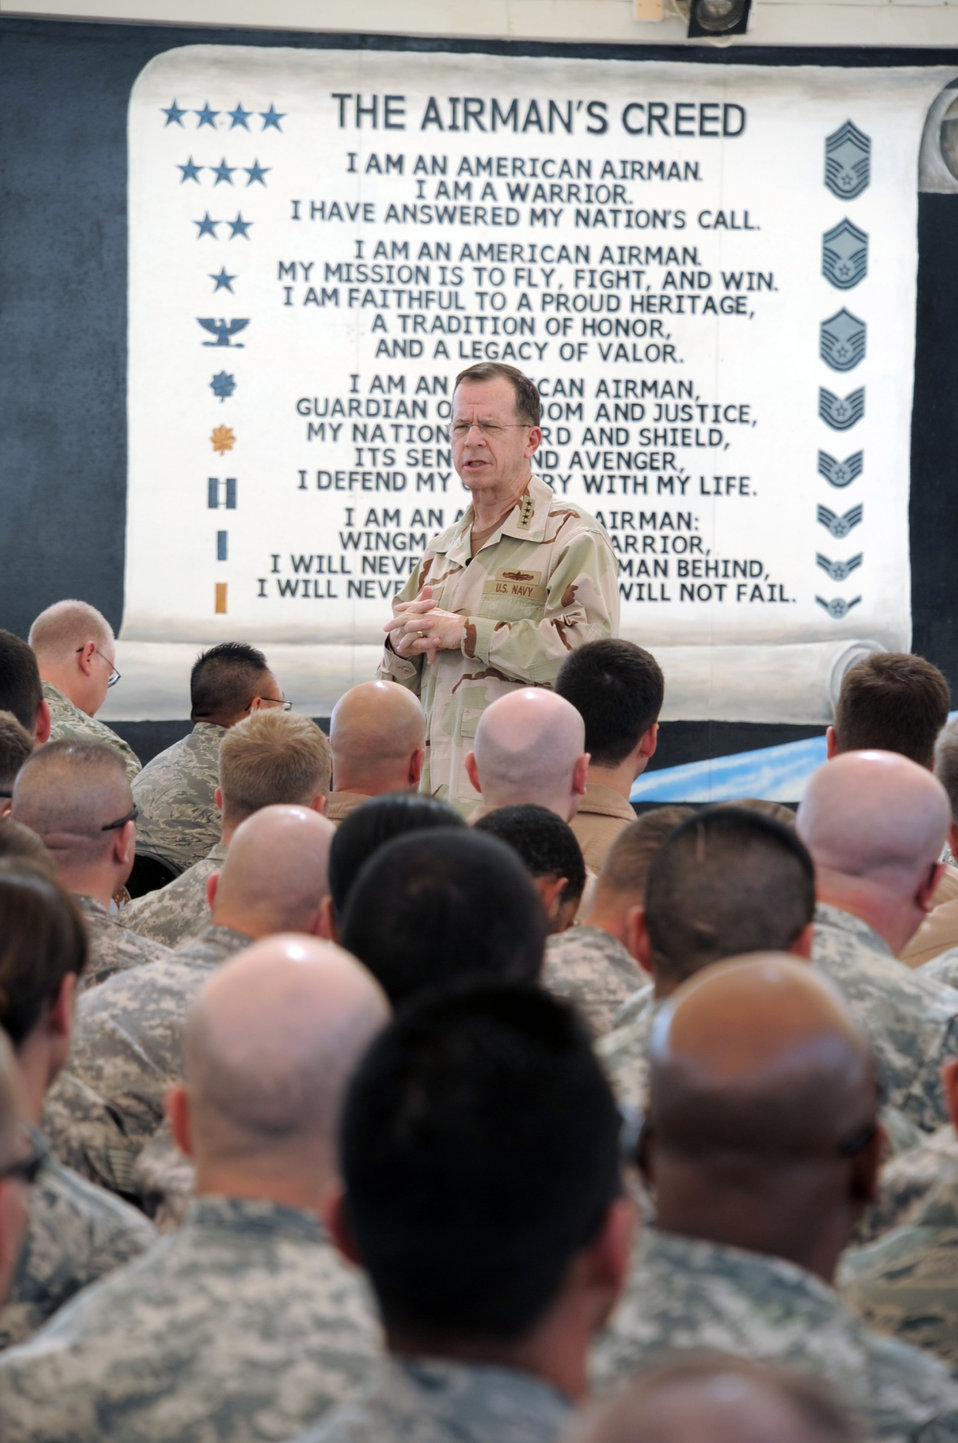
Admiral Mullen cites importance of families, leadership during Southwest Asia visit

Navy Adm. Mike Mullen talks to servicemembers during an